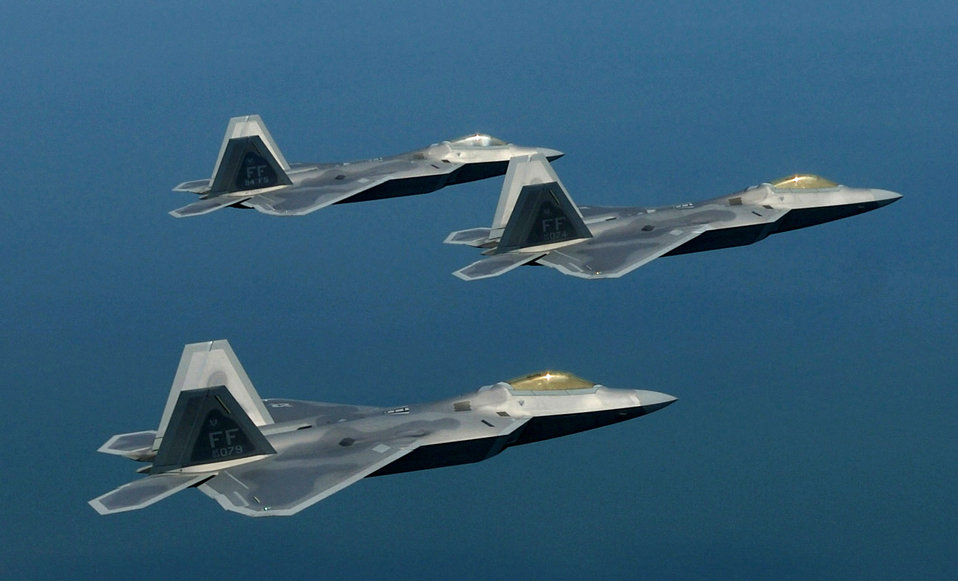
4 new pilots begin F-22 training

F-22 Raptors fly in formation. The Air Force's first four pilots to go directly to the F-22 without previous fighter experience are currently training at Luke Air Force Base, Ariz., in preparation for taking on the F-22.